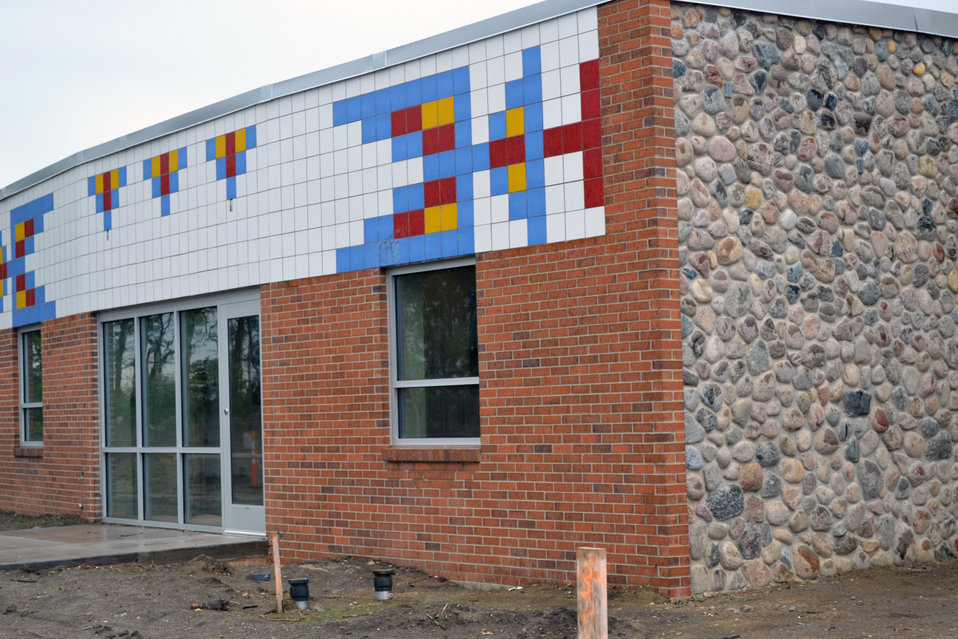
U.S. Department of Agriculture (USDA), Rural Housing Service (RHS) Administrator Tammye Treviño visit to South Dakota to co-chair a StrikeForce meeting in Sisseton, SD, attend a Housing Fair, and visit homes and facilities financed by USDA, Rural Development (RD) as part of National Homeownership Month, on Monday, June 3, 2013.